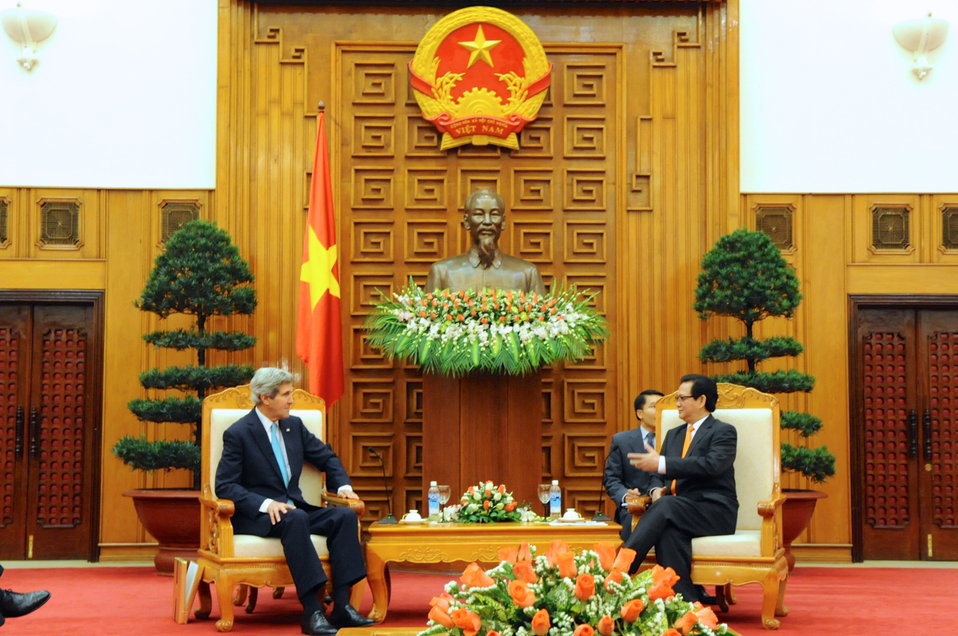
Secretary Kerry Meets With Vietnamese Prime Minister Dung

U.S. Secretary of State John Kerry sits under a bust of Ho Chi Minh during a bilateral meeting with Vietnamese Prime Minister Nguyen Tan Dung in Hanoi, Vietnam, on December 16, 2013.